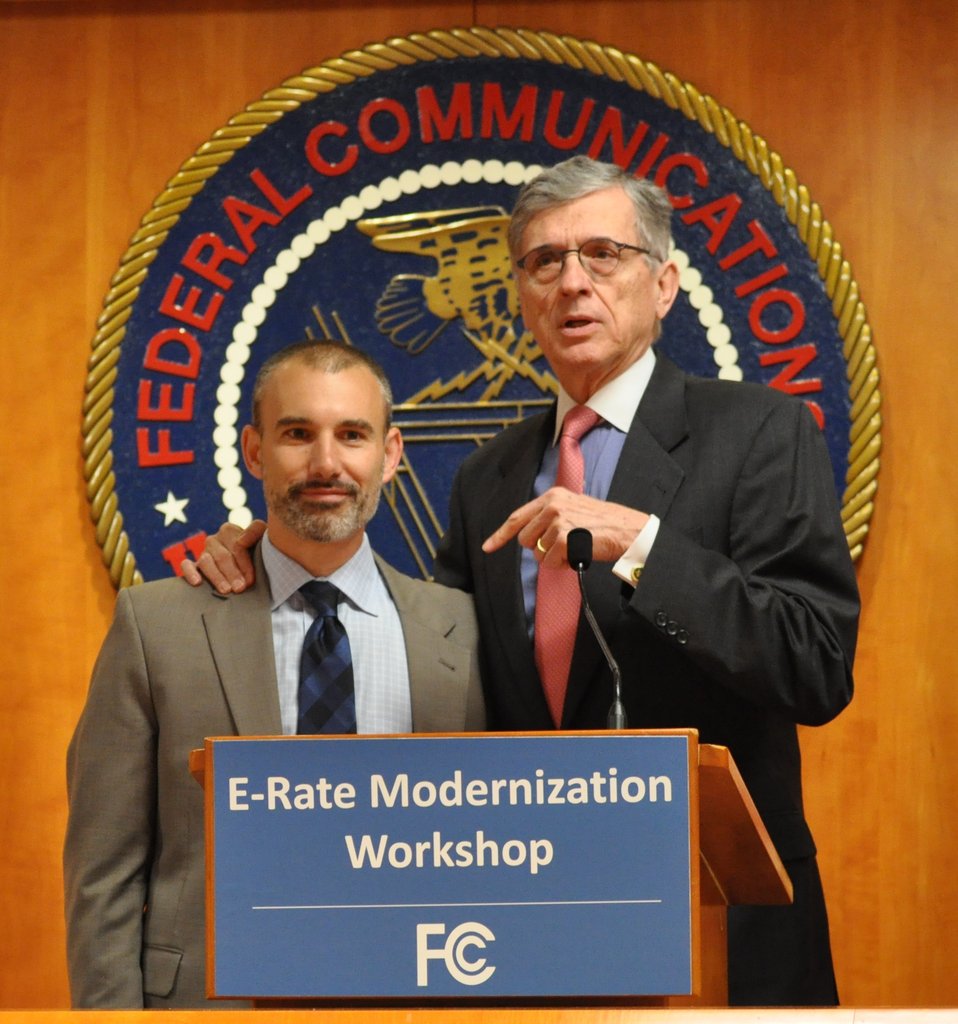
5.6.2014 E-Rate Modernization Workshop

Chairman Tom Wheeler and Patrick Halley, Wireline Competition Bureau, FCC